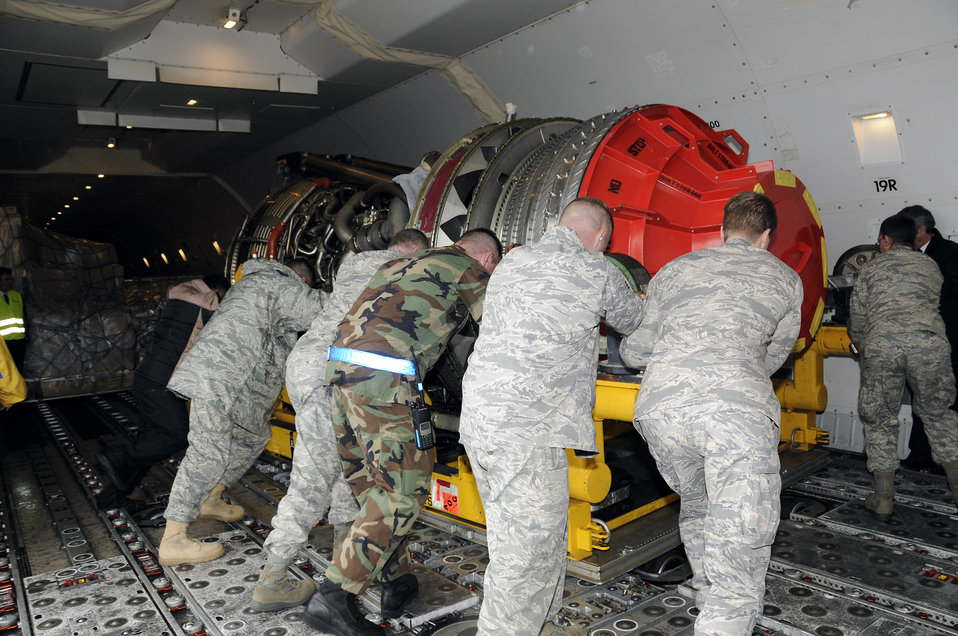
Lajes Field Airmen help disabled French aircraft

Members of the 729th Air Mobility Squadron push a defective engine into place on an Air France 747 cargo plane Jan. 13 at Lajes Field, Azores. Base members assisted the Portuguese and Air France officials in unloading a new engine for an Air France 777 passenger aircraft that made an emergency landing here Jan. 4. Airman Harrison and Sergeant Pieper are assigned to the 729th Air Mobility Squadron.